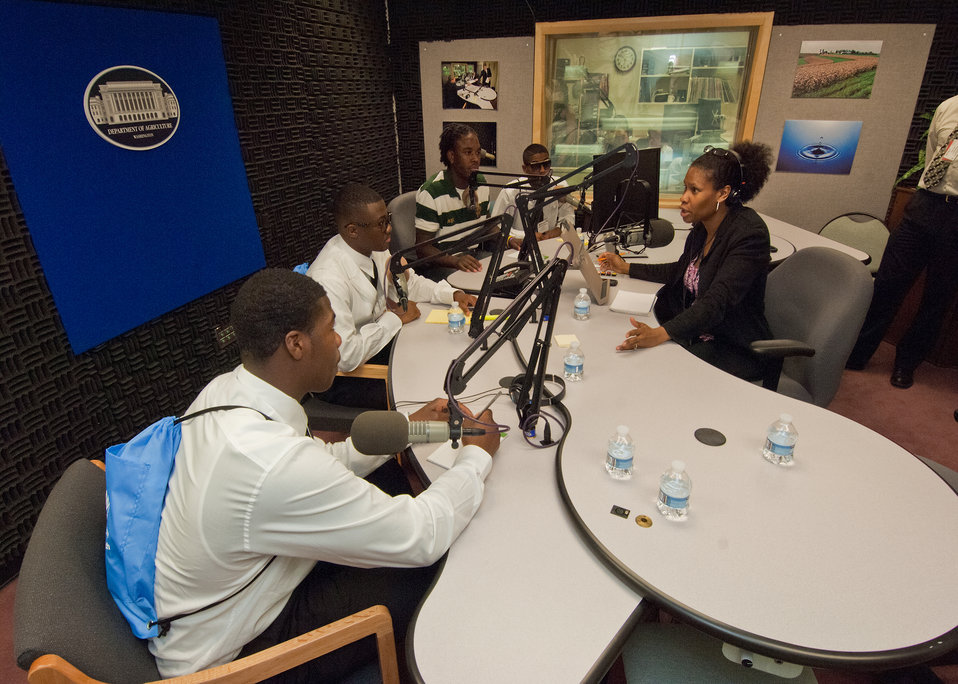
While on a Career Opportunity, seniors from Calvert High School Calvert, Texas tour the television studio United States Department of Agriculture (USDA) as part of a senior trip sponsored by the Farm Service Agency “Ag in the Classroom” program Monday, May 23, 2011, in Washington, DC. Seniors from Calvert High School Calvert, Texas (L to R) Jamarion Ramirez, Ja’Marcus Ashley, Andre Ross, and Blair Burns have an opportunity to experience the USDA Creative Media and Broadcast Center radio studio with USDA Radio broadcaster Susan Carter.